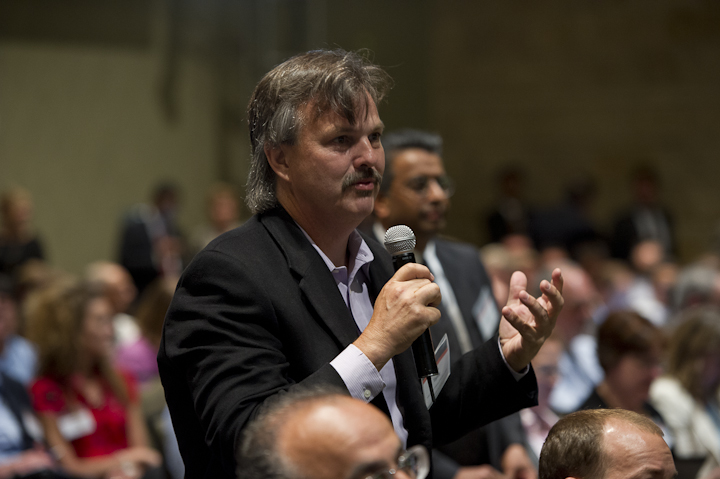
SunShot QandA

June 13, 2012-Tom Tansy from Solar Tech, asks a question to Steven Chu, Secretary of Energy, U.S. Department of Energy the secretary after gave the keynote address at the SunShot Grand Challenge Summit and Technology Forum in Denver, Colorado.